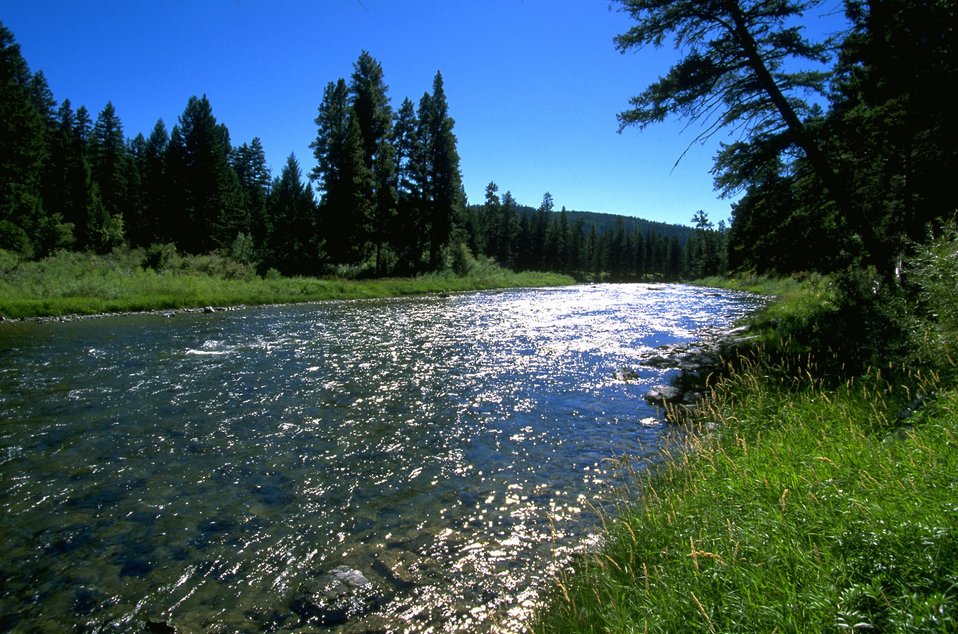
Scenic shot of Blackfoot River